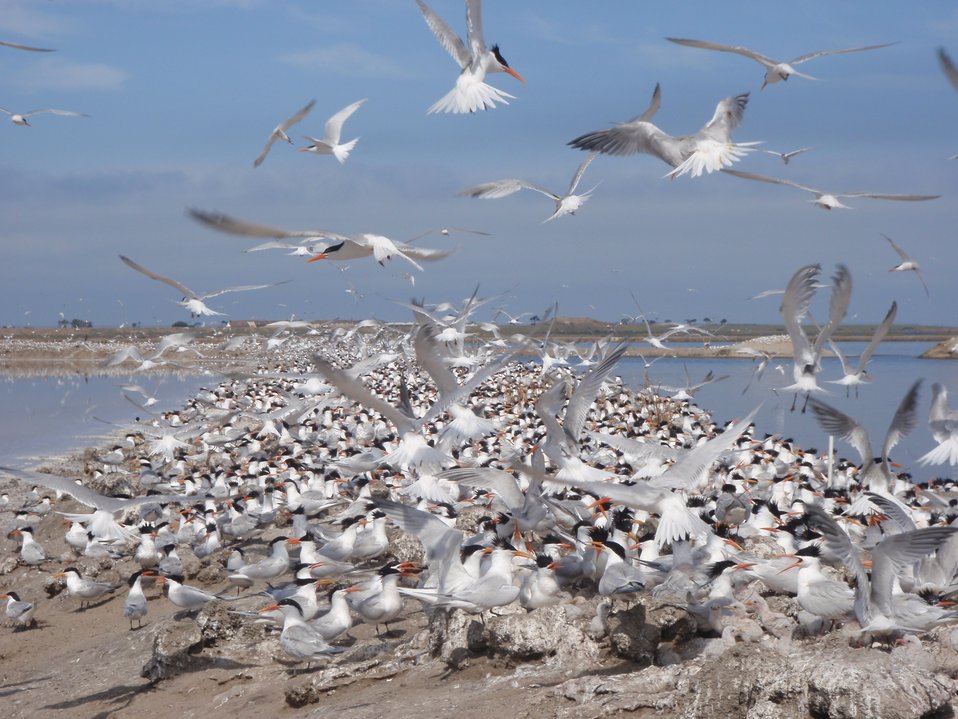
Terns swarm the salt ponds on San Diego Bay NWR in June

An Elegant tern (ELTE) colony on the San Diego Bay NWR, made up of about 10,000 nests. This is only one of the main levees they nest on each year. This year (2010) was a record-breaking year for ELTE's